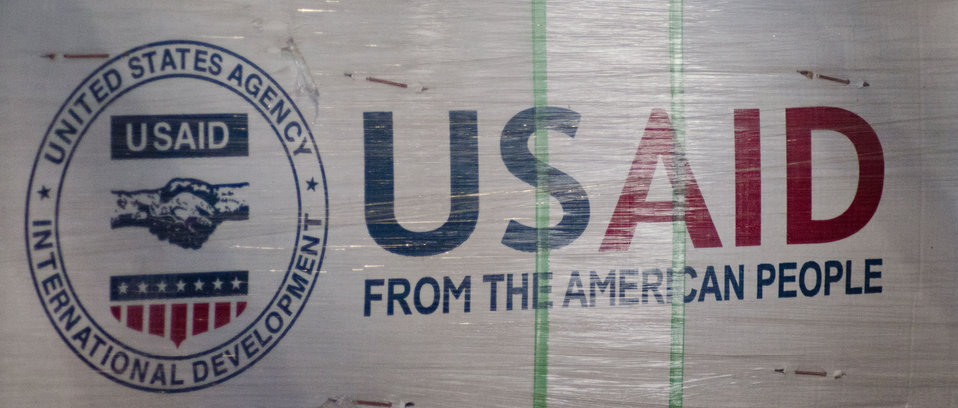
Crowley Logistics in Miami, FL on Friday, August 26, 2011 is one of three U.S. Agency for International Development (USAID) shipping and logistics facilities in the nation. In times of emergency humanitarian relief aid, they can respond with supplies delivered to aircraft at Miami International Airport within two hours. They utilize articulating forklifts, which hinge in the middle to store and retrieve pallets of supplies through narrow aisle ways. This allows for a higher density of stored supplies in the warehouse. Pallets of supplies are stacked three levels high. USAID provides humanitarian assistance through the Office of U.S. Foreign Disaster Assistance (OFDA). OFDA is the lead U.S. Government (USG) office charged with providing and coordinating USG humanitarian assistance in response to international emergencies and disasters. To achieve this, USAID works in cooperation with other USG offices such as the U.S. Department of Agriculture (USDA), and international humanitarian experts. The USDA provides food assistance to support emergency feeding programs in countries experiencing food shortages due to drought and civil conflict.